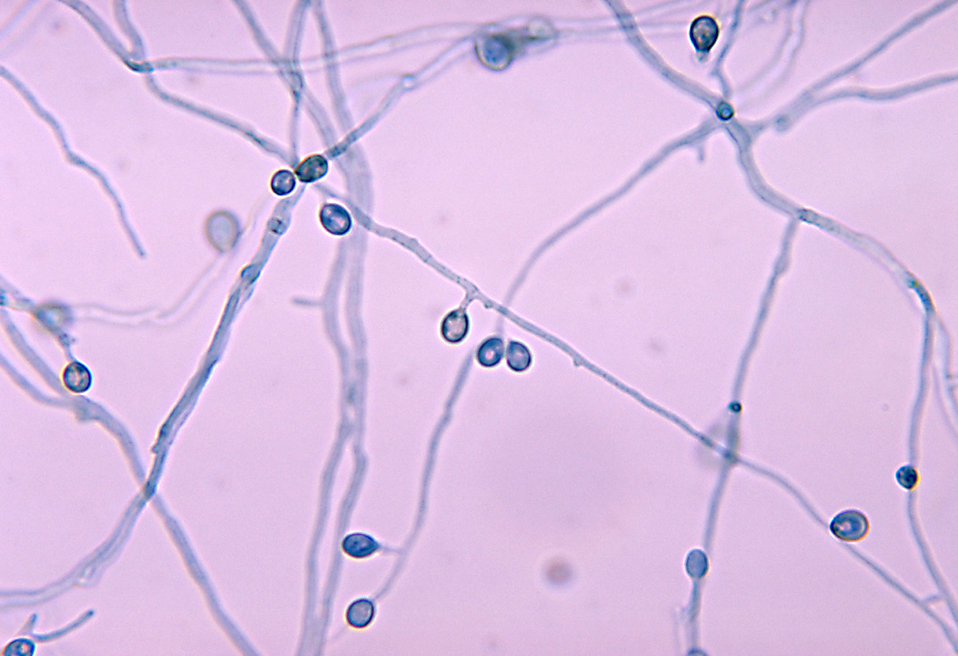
This micrograph depicts a number of mycelia with attached conidia of the fungual organism Pseudallescheria boydii.